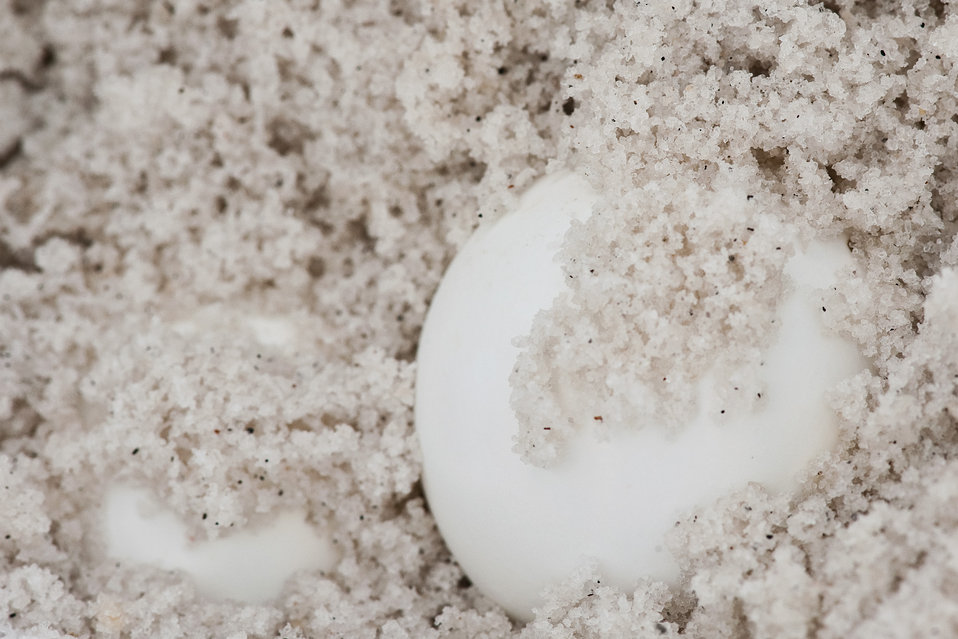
Turtle Eggs avoid Gulf Oil Danger

The last of 112 Loggerhead sea turtle egg nest is ready for a finallayer of sand in Styrofoam coolers at Eglin Air Force Base, Florida, on August 9, 2010. To date, Eglin has excavated more than 400 eggs. The 96th Civil Engineer Squadron is working with other governmental agencies, whose goal is the transportation of more than 700 nests from the Gulf Coast to the Atlantic coast. When they get there, eggs are monitored at a controlled climate facility, where they will be allowed to hatch in the cooler. Wildlife technicians will then release them into the ocean, free from oil floating in the Gulf of Mexico.